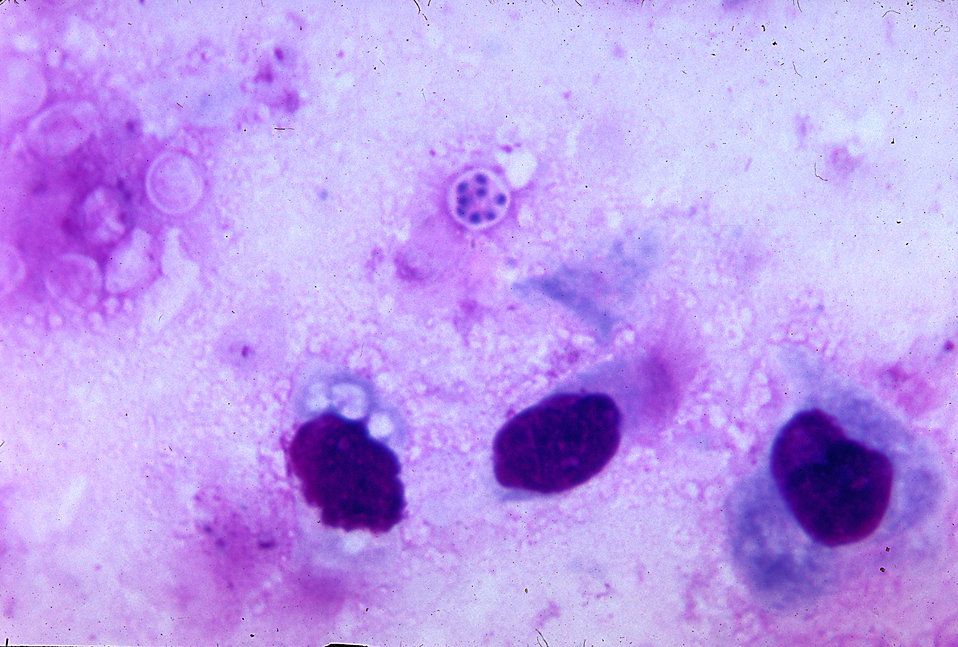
Pneumocystis jirovecii, formerly known as Pneumocystis carinii, is present in this lung impression smear, using Giemsa stain.